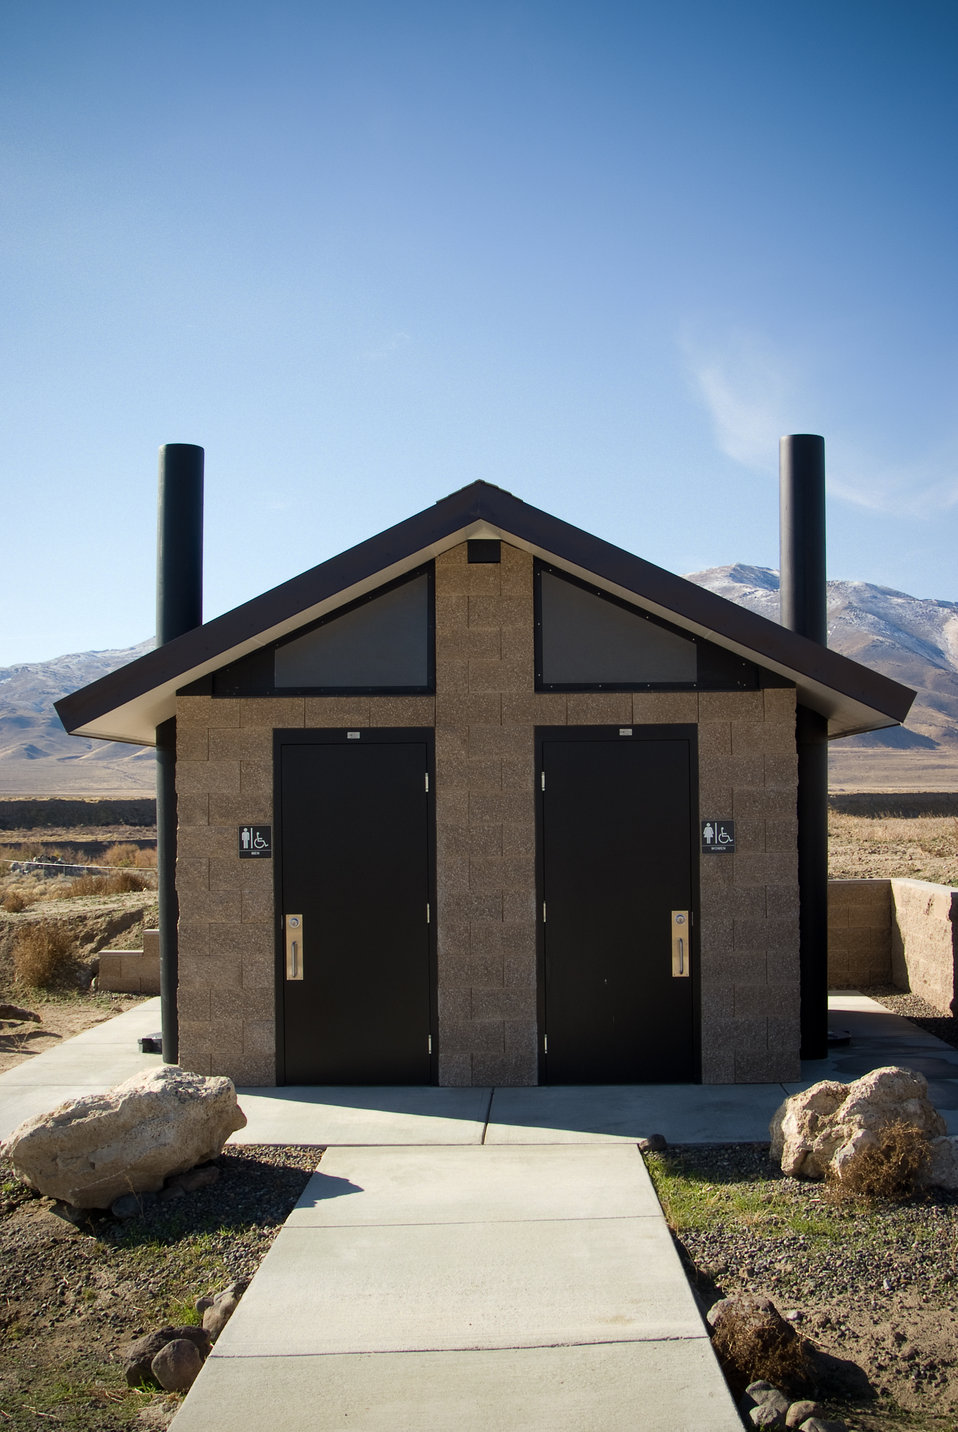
Marble Bluff Fish Facility restroom

The USFWS Marble Bluff Fish Facility restroom was made accessible through frnding by the American Recovery & Reinvestment Act of 2009.